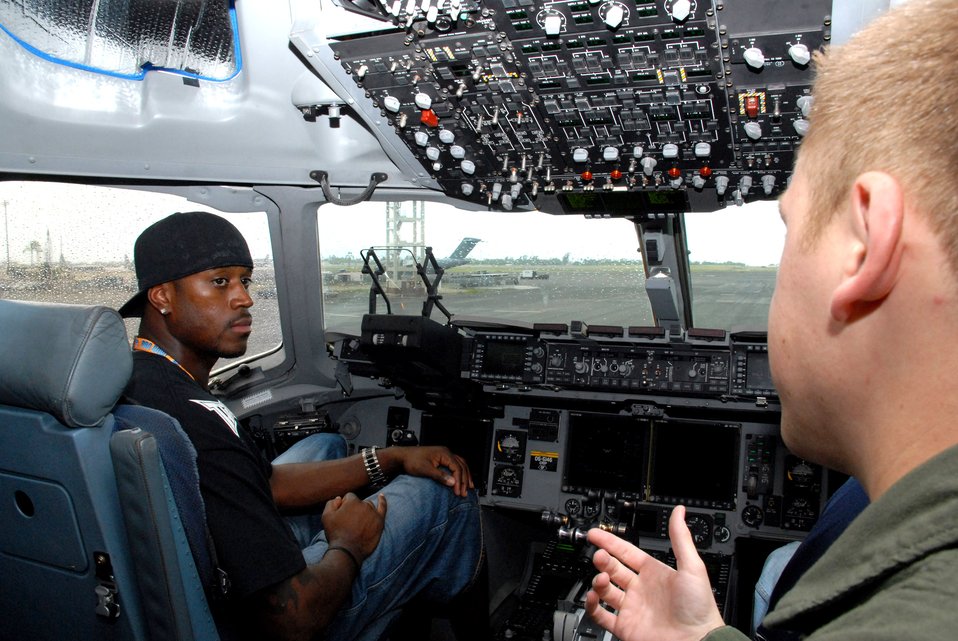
Airmen support Pro Bowl

San Diego Chargers wide receiver Kassim Osgood receives a briefing from 1st Lt. Matt Wood about the C-17 Globemaster III during his NFL Pro Bowl Player appearance Feb. 7 at Hickam Air Force Base, Hawaii. Lieutenant Wood is assigned to the 535th Airlift Squadron.